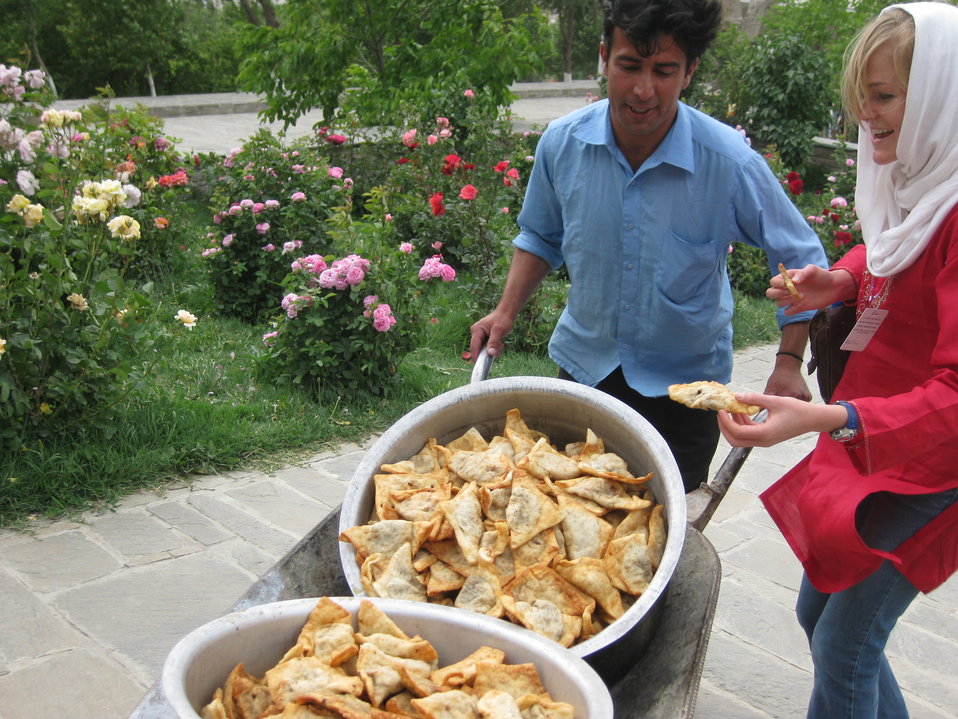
Afghan Youth Voices 090